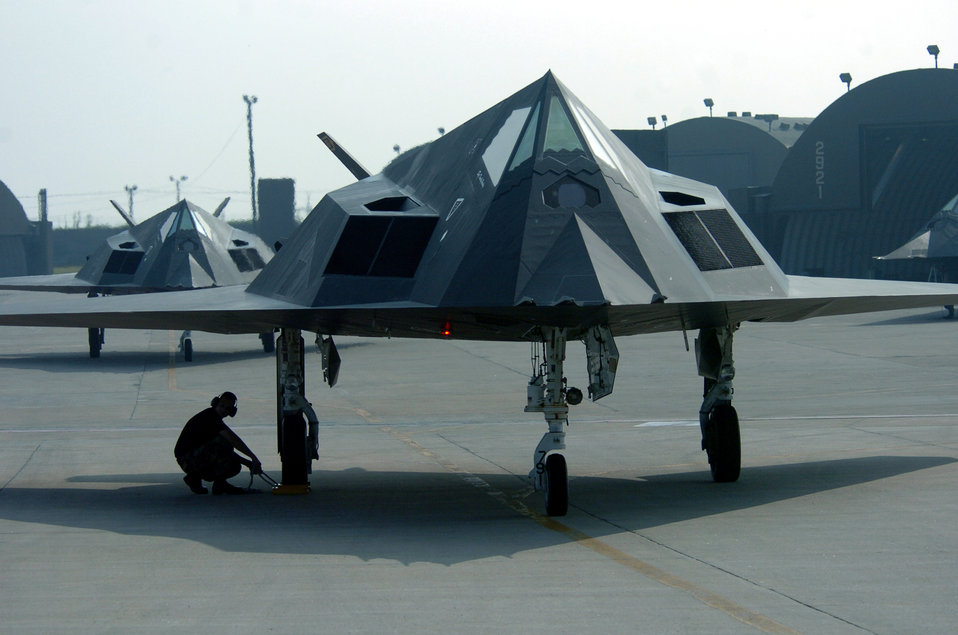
Holloman Airmen train at Kunsan

KUNSAN AIR BASE, South Korea -- Senior Airman Tony Kepo'o prepares to pull the wheel chock during an end-of-runway check on an F-117 Nighthawk here. He is a crew chief from the 49th Maintenance Squadron at Holloman Air Force Base, N.M. About 300 Airmen from Holloman are currently deployed here supporting operations in the Pacific region.